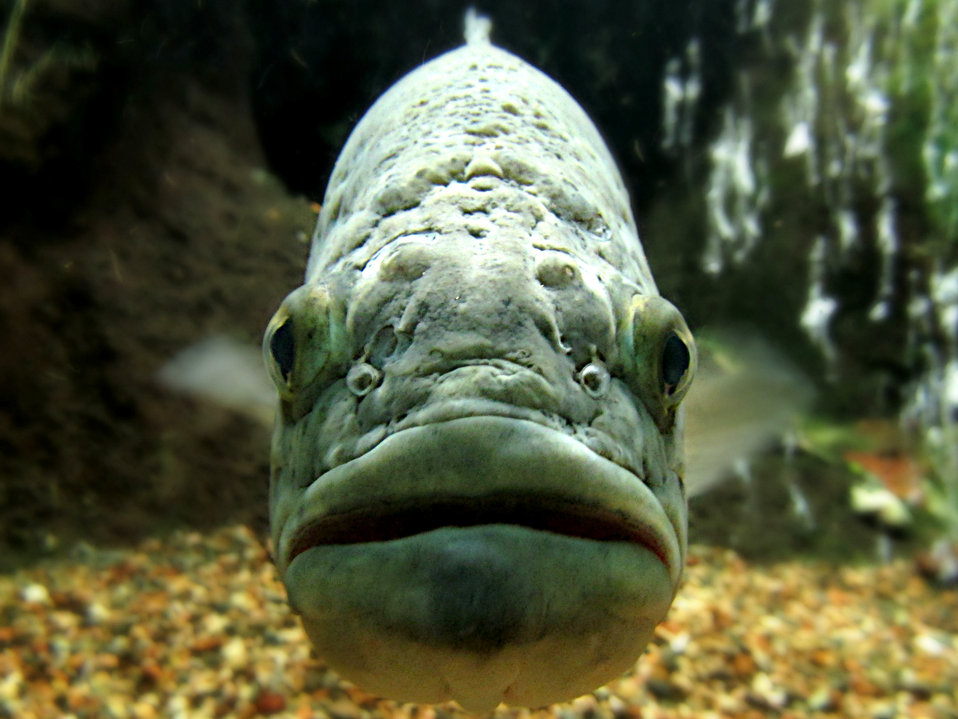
Largemouth

Can you tell why they are called largemouth bass?

This big guy can be seen at our aquarium, which reopens April 1.